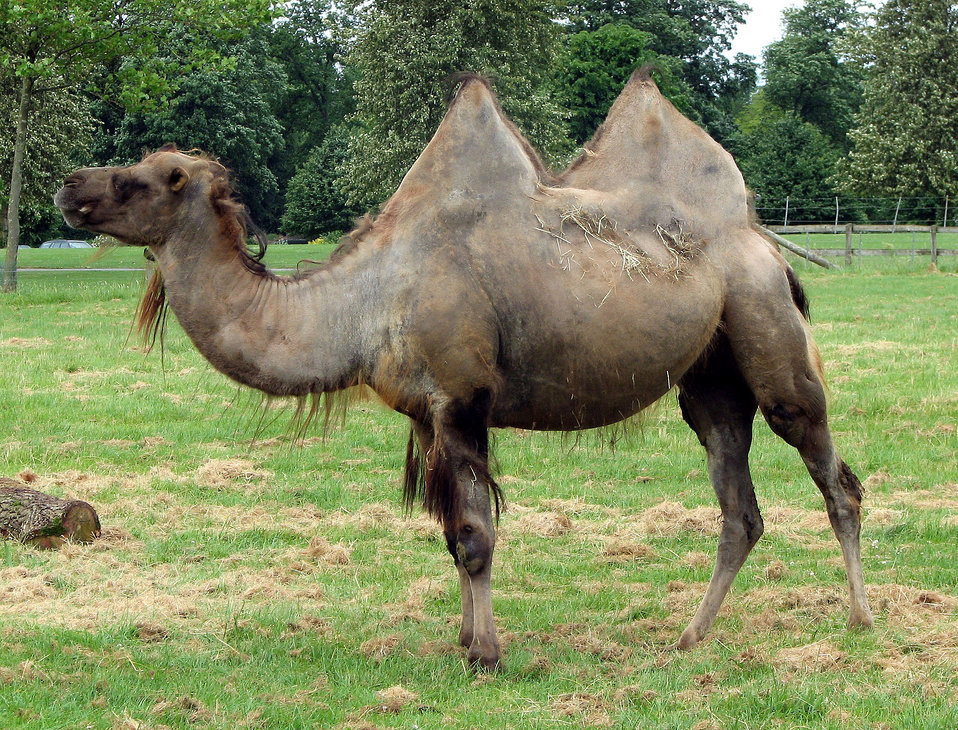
Bactrian.camel.sideon.arp